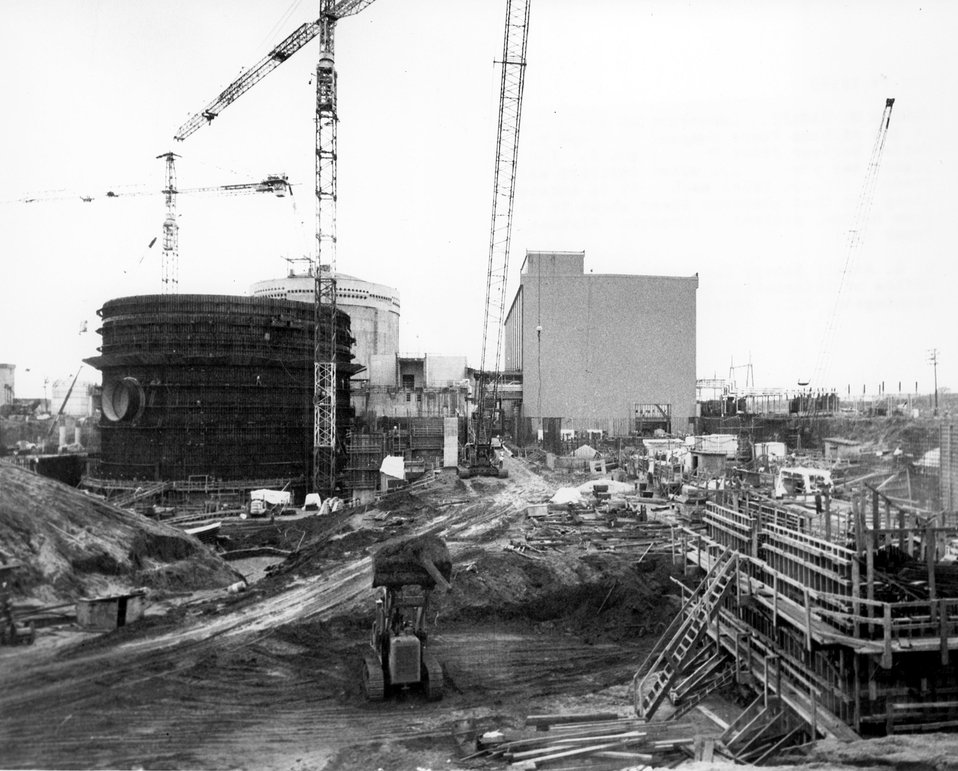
Construction activities at the Joseph M. Farley Power Plant.